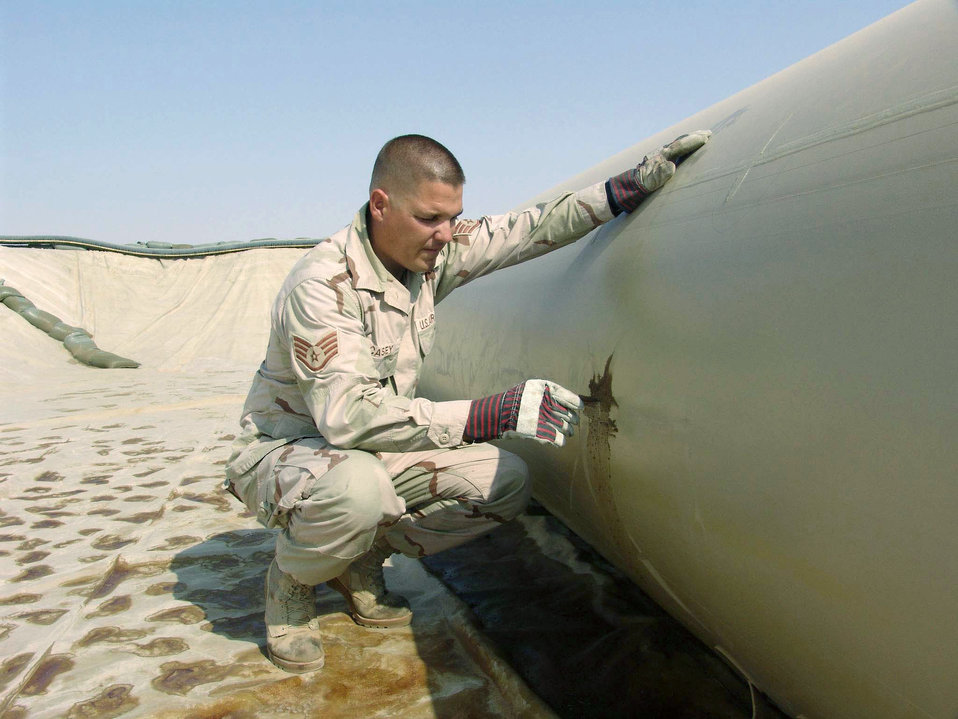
Bladder control

SOUTHWEST ASIA -- Staff Sgt. Ron Casey inspects a stopped leak on a fuel bladder at a forward-deployed location Oct. 14. Sergeant Casey is a fuels bulk storage supervisor assigned to the 386th Expeditionary Logistics Readiness Squadron. He is deployed from Eglin Air Force Base, Fla.